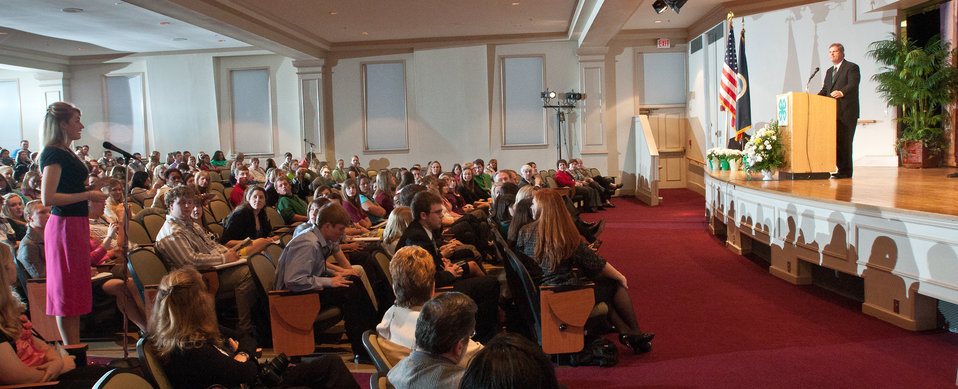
Jessica Mullin (standing) asked U.S. Department of Agriculture (USDA) Secretary Tom Vilsack during the National 4-H Conference on Tuesday, April 5, 2011 in Washington, DC. Her question was how America will keep up with future demands. The conference is the premier youth development opportunity of the USDA. Aged between 15-19 years old the attendees were selected by various means by their states to be delegates to the conference.